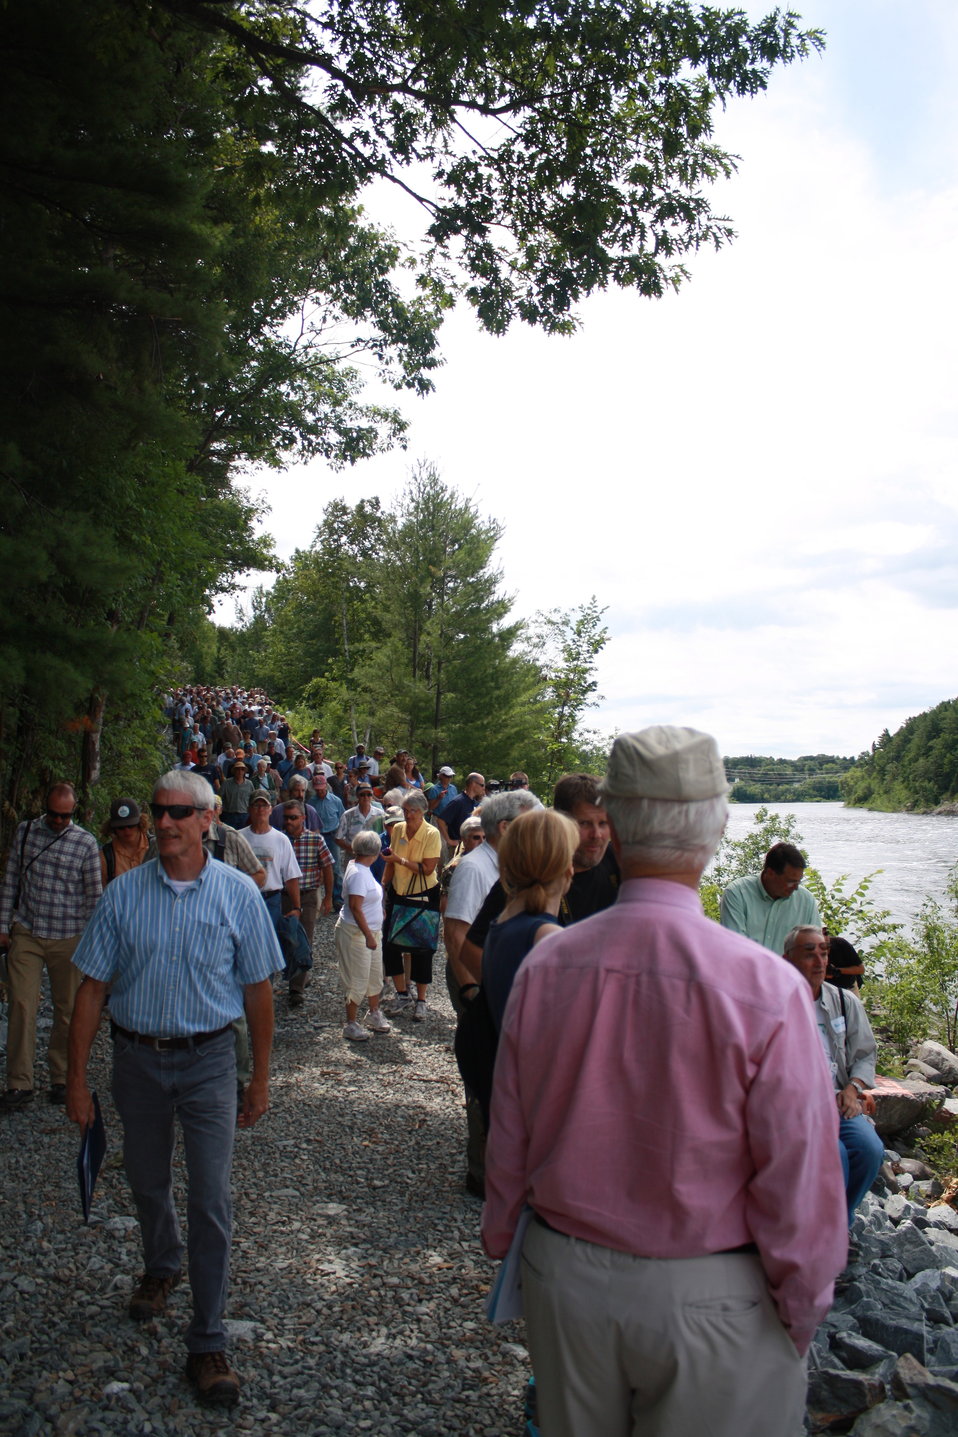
Veazie Dam Removal

John Banks of the Penobscot Indian Nation (left) is at the head of the group heading down from the press conference to see the dam breach.